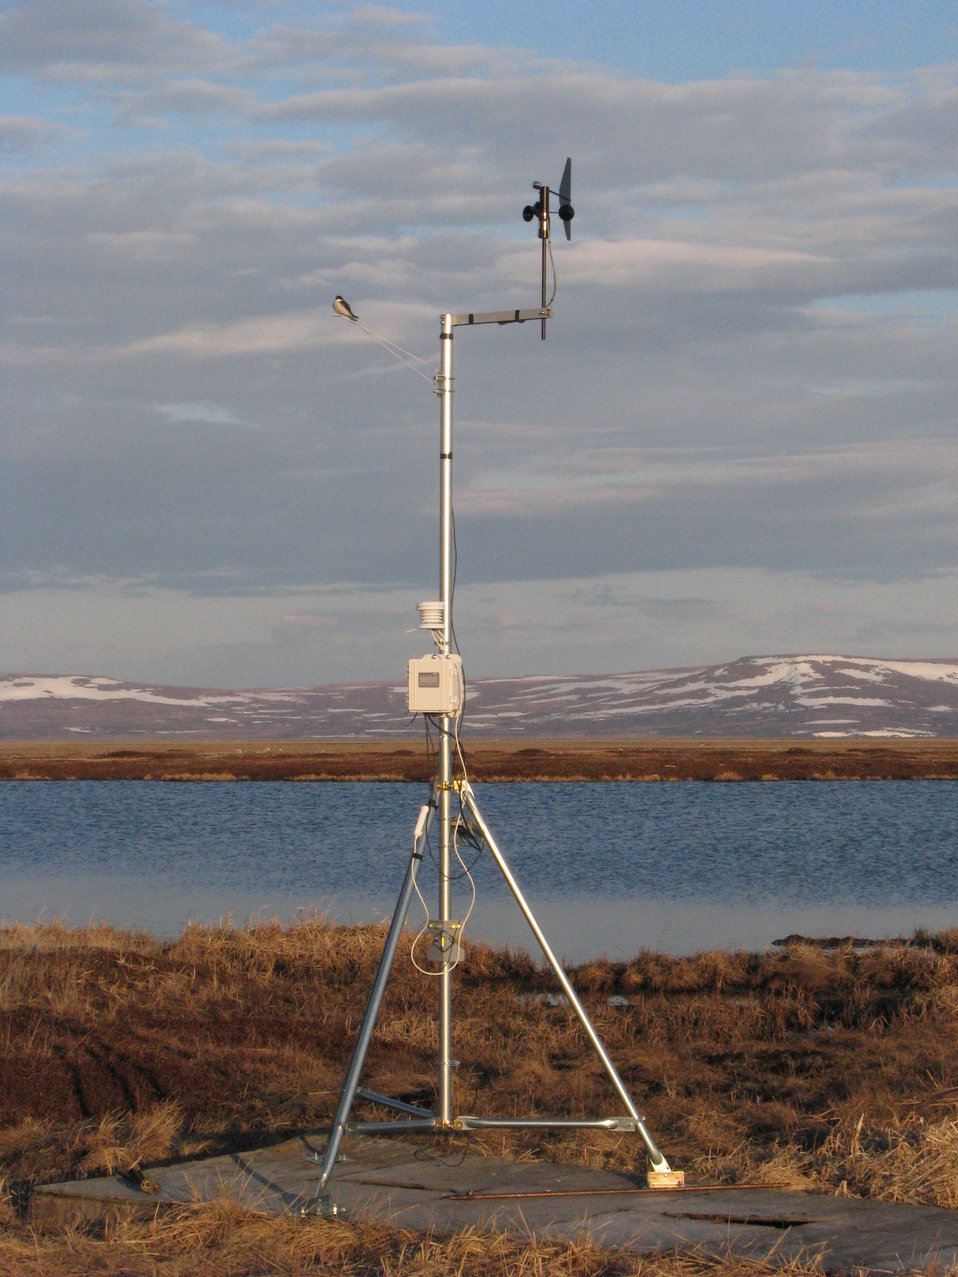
Weather Station

Weather stations are used to document rainfall, wind speed and direction, solar radiation, etc.

USFWS Yukon Delta NWR